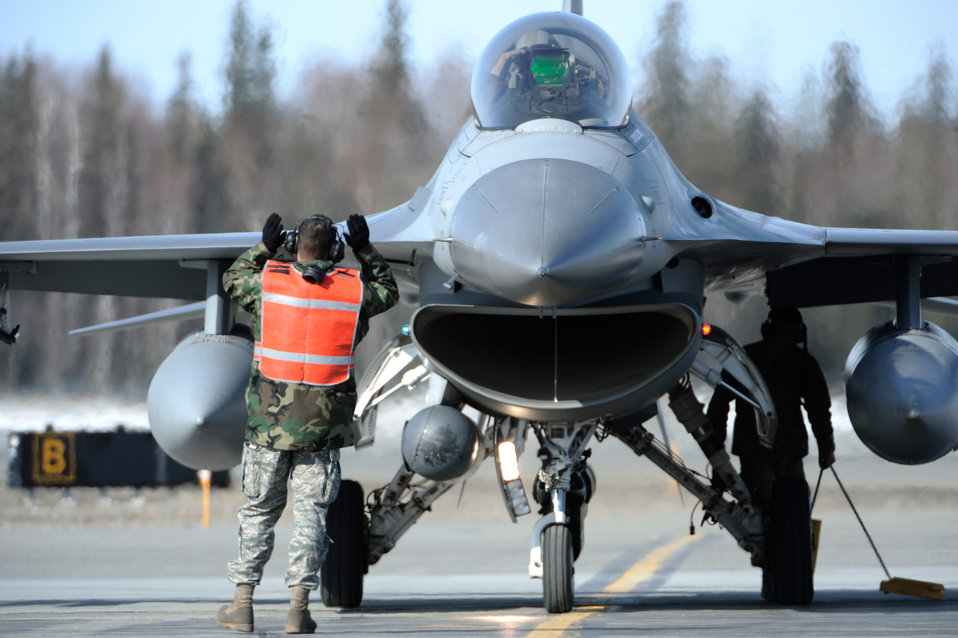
Stop here!

Staff Sgt. Jason Lewey marshals an F-16 Fighting Falcon returning from a training mission April 20 during Red Flag-Alaska at Eielson Air Force Base, Alaska. Sergeant Lewey and the F-16 are from the 8th Fighter Wing at Kunsan Air Base, South Korea.